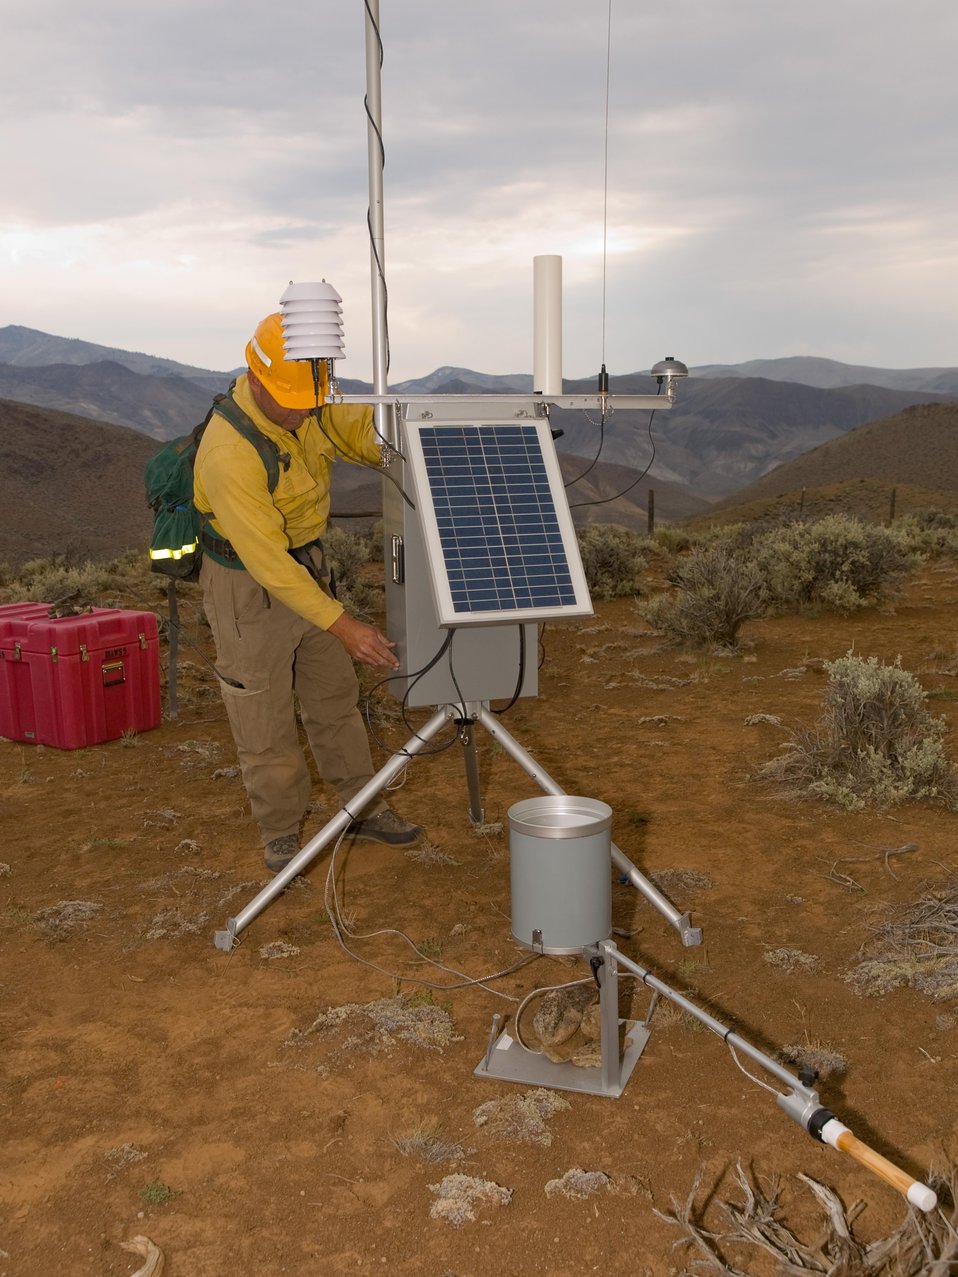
Firefighter sets up mobile weather tracking station for the Lodgepole Fire. The Lodgepole Fire in the Salmon-Challis National Forest near Challis, ID began on Jul. 20, 2013 by lightning has consumed approximately 13,700 acres and is approximately 15% contained.